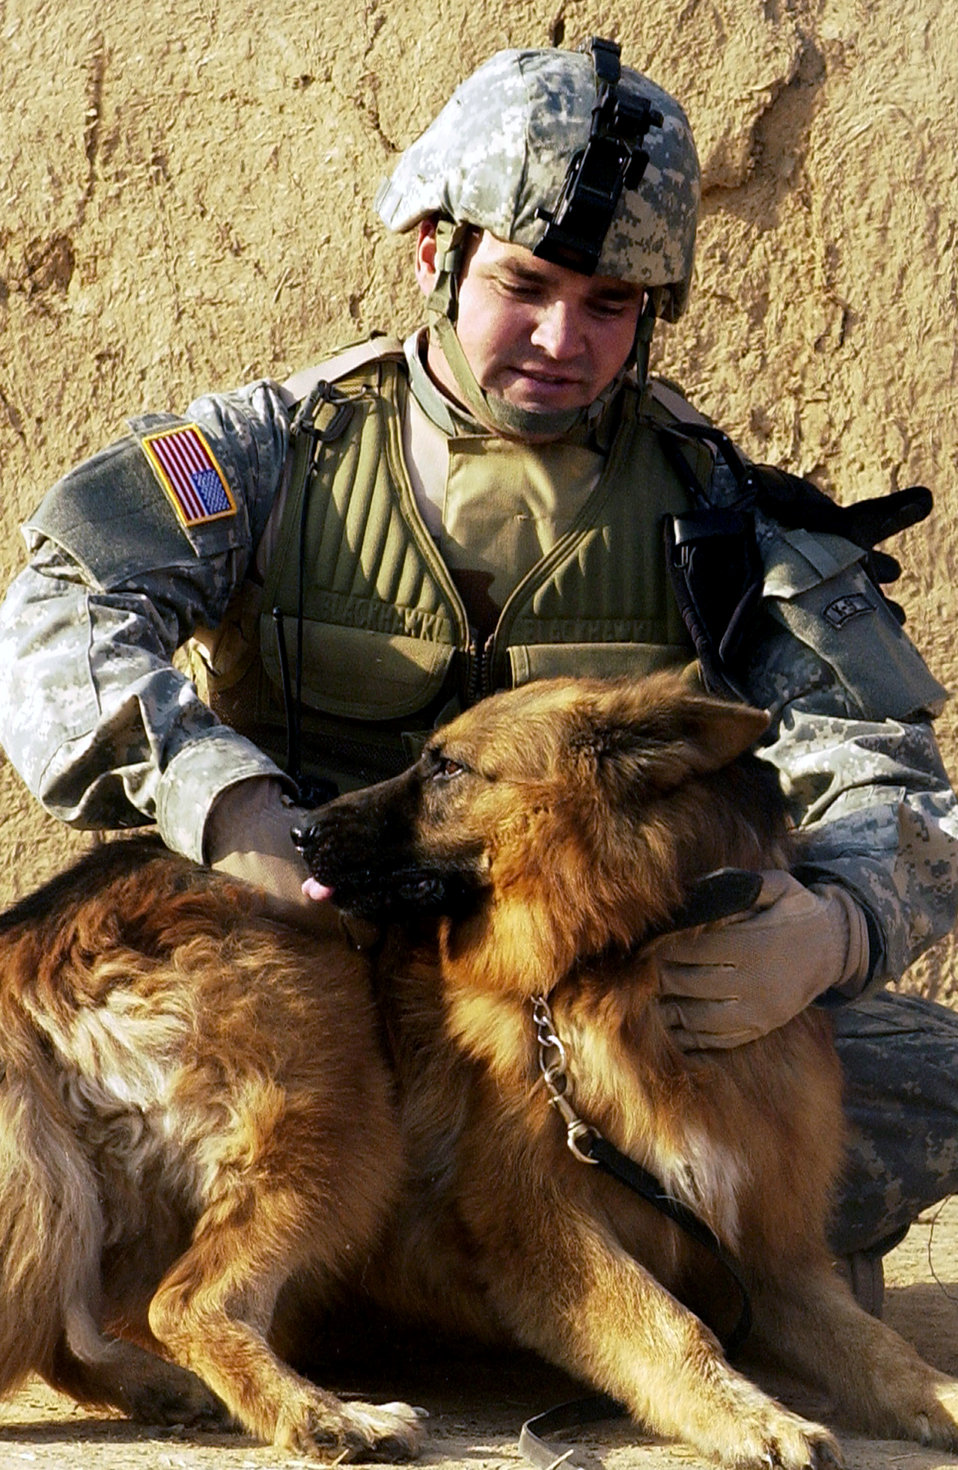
Sniffing out trouble

Staff Sgt. Russell McLaughlin takes a moment to scratch the back of his furry companion after the completion of a raid Dec. 8 at Tall Qabb village, Kirkuk Province. Sergeant McLauglin is a K-9 dog handler attached to the Army's 25th Infantry Division.